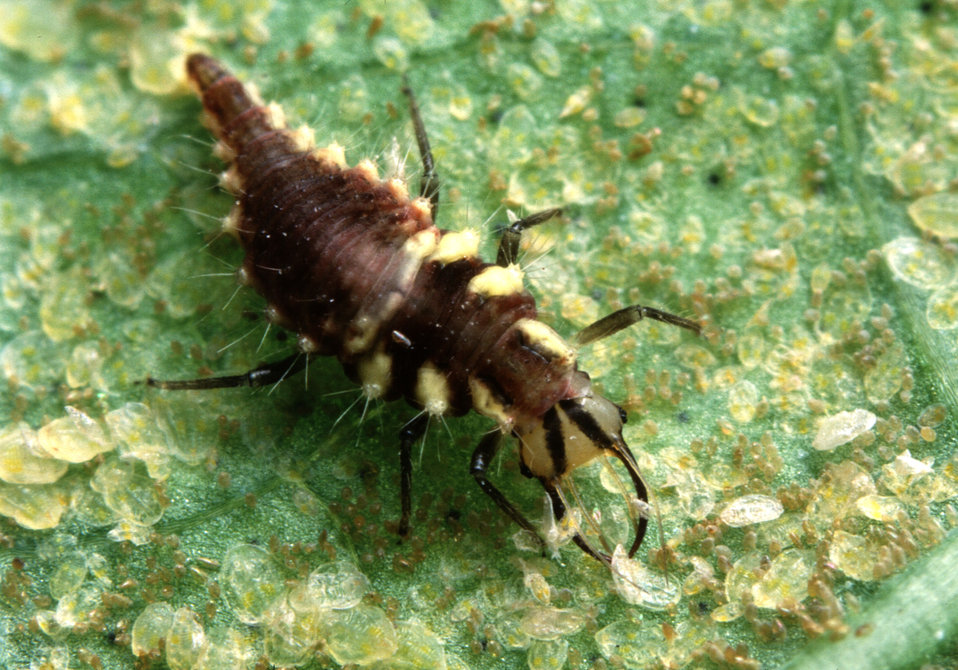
A green lacewing larva dines on whitefly nymphs.